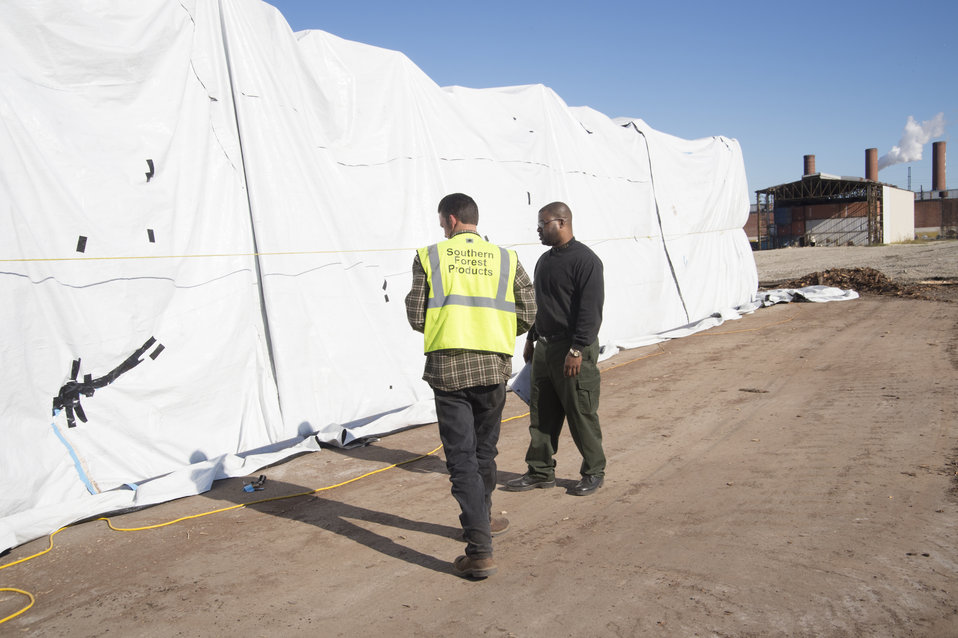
U.S. Department of Agriculture’s (USDA) Animal and Plant Health Inspection Service (APHIS) employee examines the fumigaion tent used on U.S. logs for export near the Port of New Orleans in New Orleans, LA on Wednesday, Nov. 20, 2013. The fumigation process prevents the spread of any bacteria or insect that might cause harm to a foreign country’s agriculture.